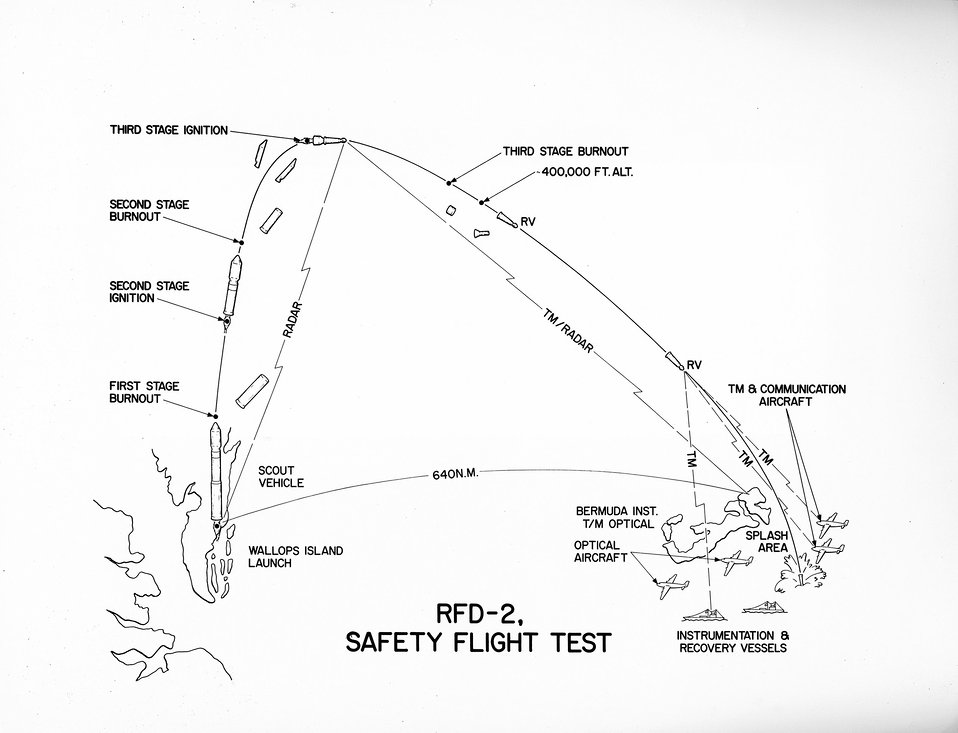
An artists conception of the RFD-2 Re-entry flight experiment showing the events scheduled to occur during the suborbital flight from Wallops Island, VA to an impact area southeast of Bermuda.